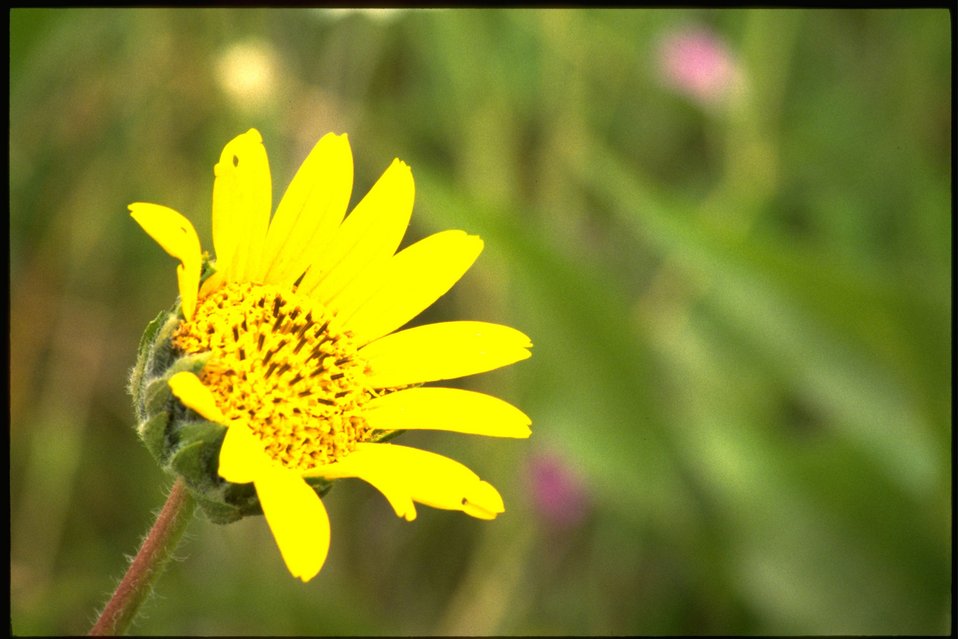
Medium shot of Narrowleaf Mule Ears, Wyethia angustifolia.